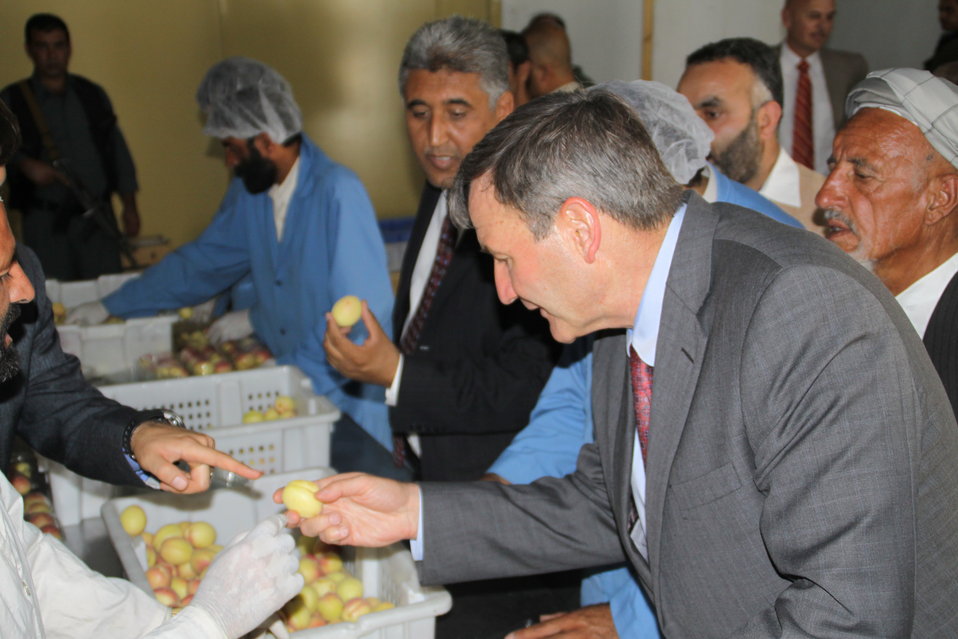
Badam Bagh Farm